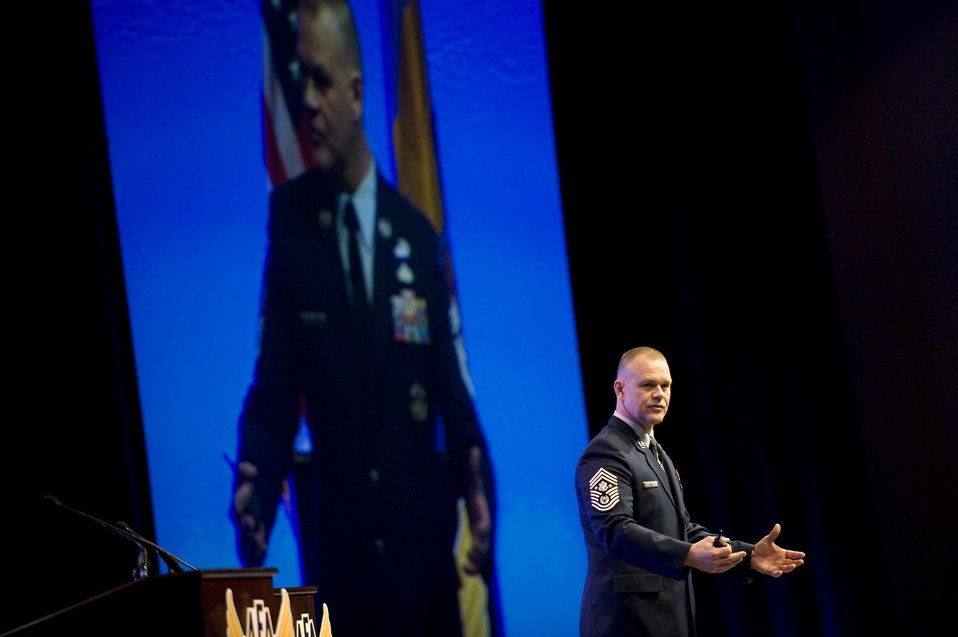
Chief master sergeant of the Air Force shares vision for enlisted Airmen

Chief Master Sgt. of the Air Force James A. Roy speaks about the enlisted perspective during the Air Force Association's Air Warfare Symposium and Technology Exposition Feb. 18, 2010, at the Rosen Shingle Creek Hotel in Orlando, Fla. The symposium will run through Feb. 19.